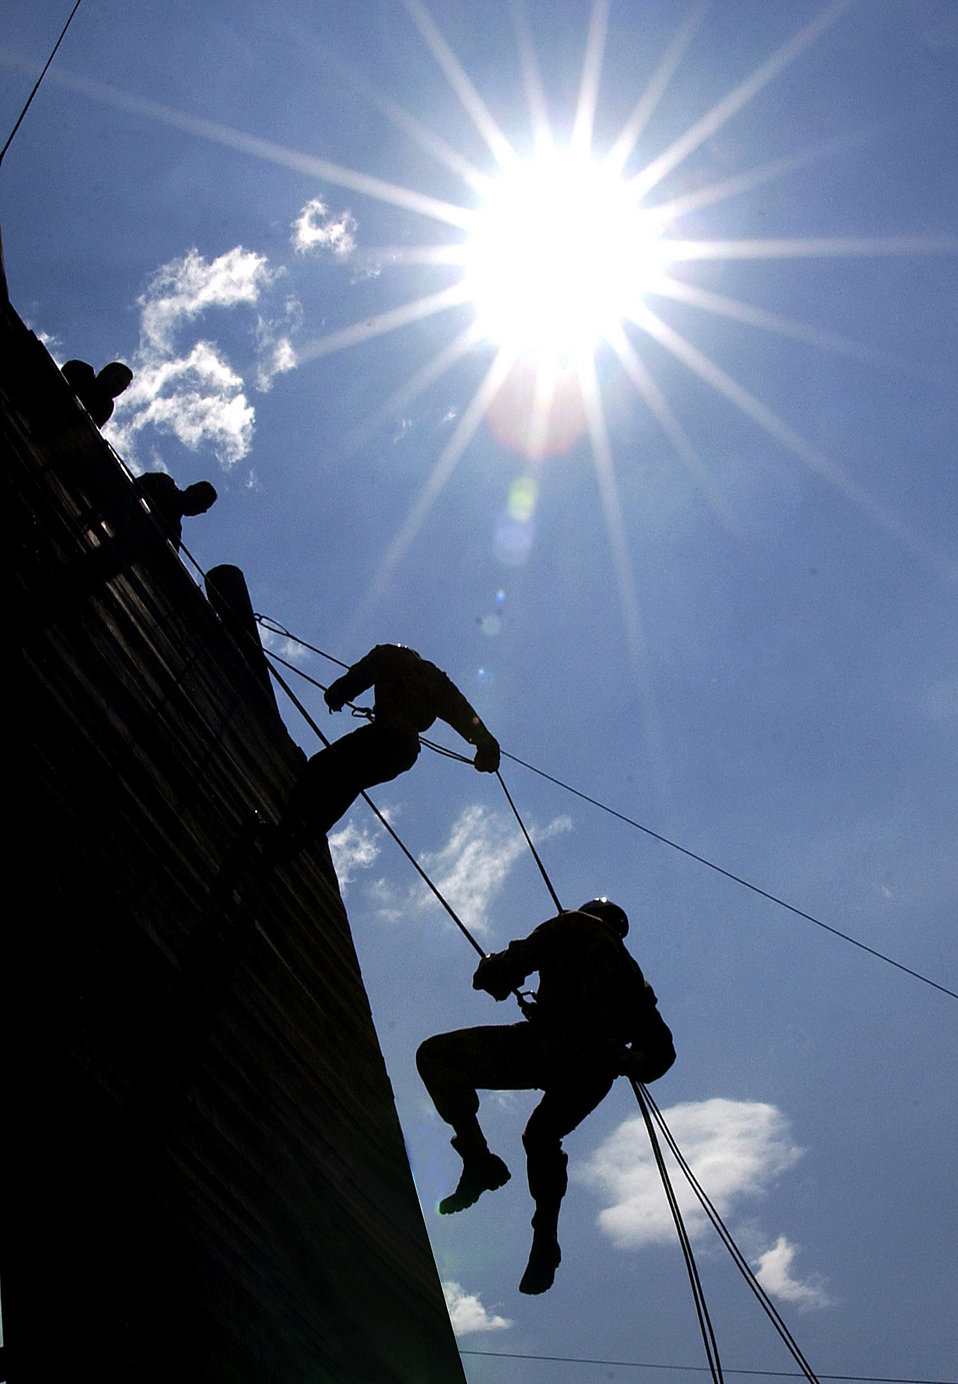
Up and over

SOTO CANO AIR BASE, Honduras -- Airmen teach Honduran soldiers rapelling techniques from a 70-foot tower here recently. The soldiers are part of Joint Task Force Bravo, a 500-person Air Force and Army task force deployed to Honduras. JTF-Bravo has a multifaceted mission of conducting humanitarian and civic assistance, airborne search and rescue missions, and illegal drug interdiction support for the Central American region.